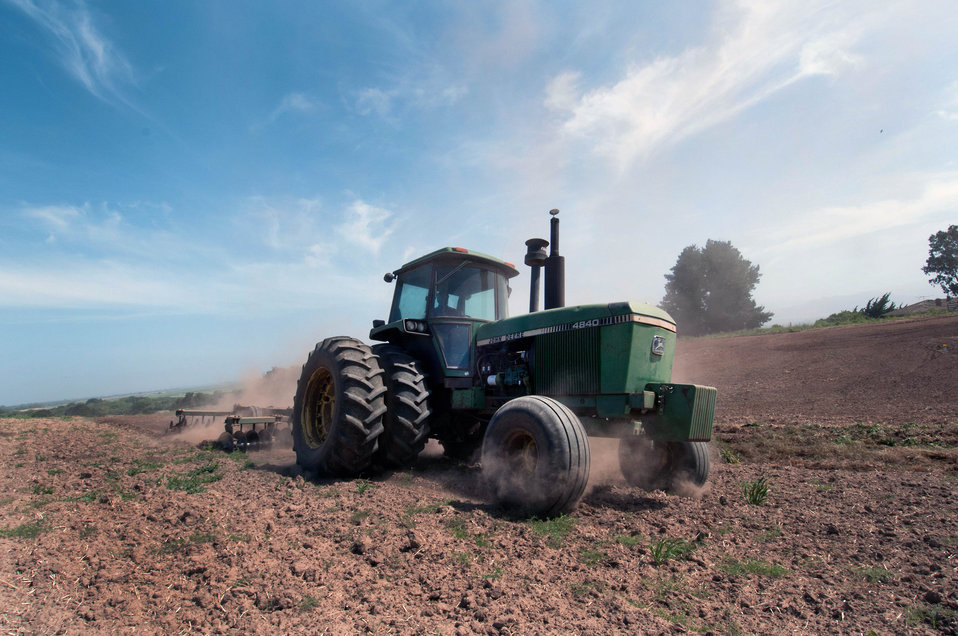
A tractor turns the cover crop into the soil in preperation for planting at Leafy Greens, in the Salinas Valley of California on Thursday, June 16, 2011. Leafy Greens grows row crops of lettuce, broccoli, cauliflower sweet peas and seed beans. He uses rotational crop plantings to control weeds and plant disease. When a plot of land is at rest, he plants a cover crop of barley and rye grass because the roots hold the topsoil reducing erosion of the soil. He is converting his irrigation system from conventional sprinklers to micro irrigation. Where one system produces runoff and erosion of the soil; the other has little or no erosion, less maintenance, easy harvest and less water is needed. When seasonal rains produce runoff, the silt that flows with it is caught in sediment ponds. The ponds have grass, bushes and trees to hold the structure and allow the silt to settle. Spillways lead to holding ponds and eventually the Salinas River, a tributary of the Monterey Bay National Marine Sanctuary. So far, because of its design and efficiency, no water has made it to the river.